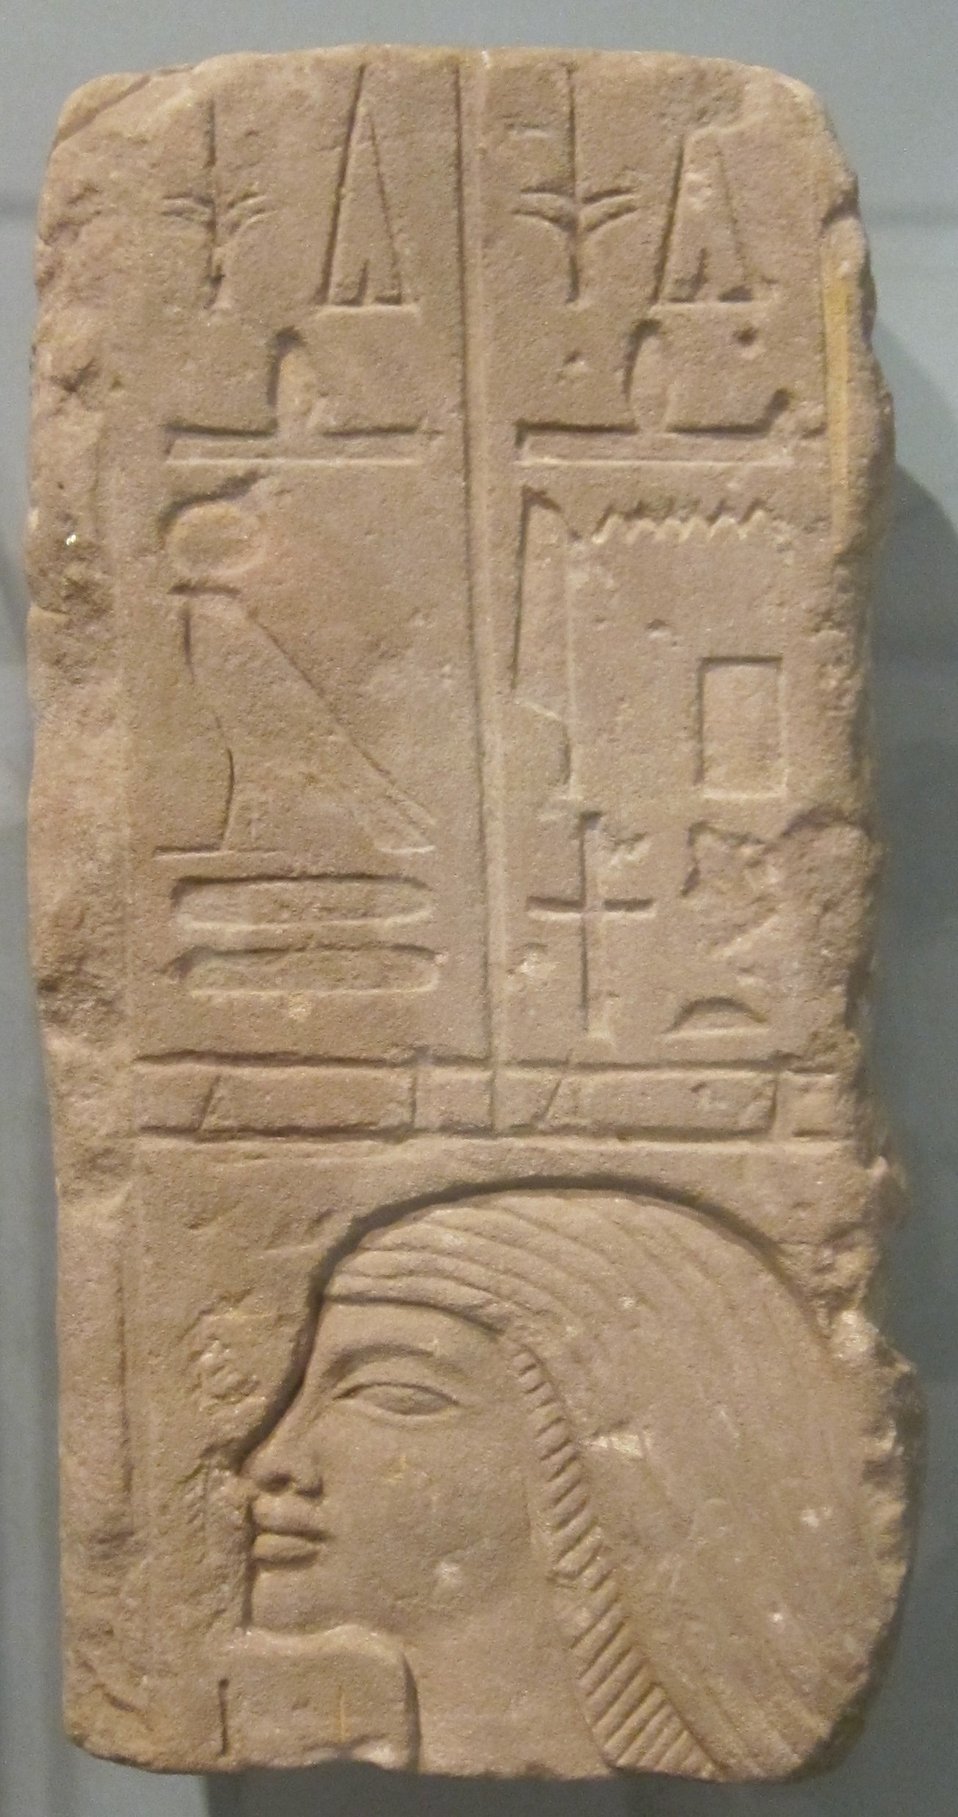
Male Head, Egypt, New Kingdom, Dynasty 20, c. 1185-1070 BCE, Limestone, Honolulu Academy of Arts